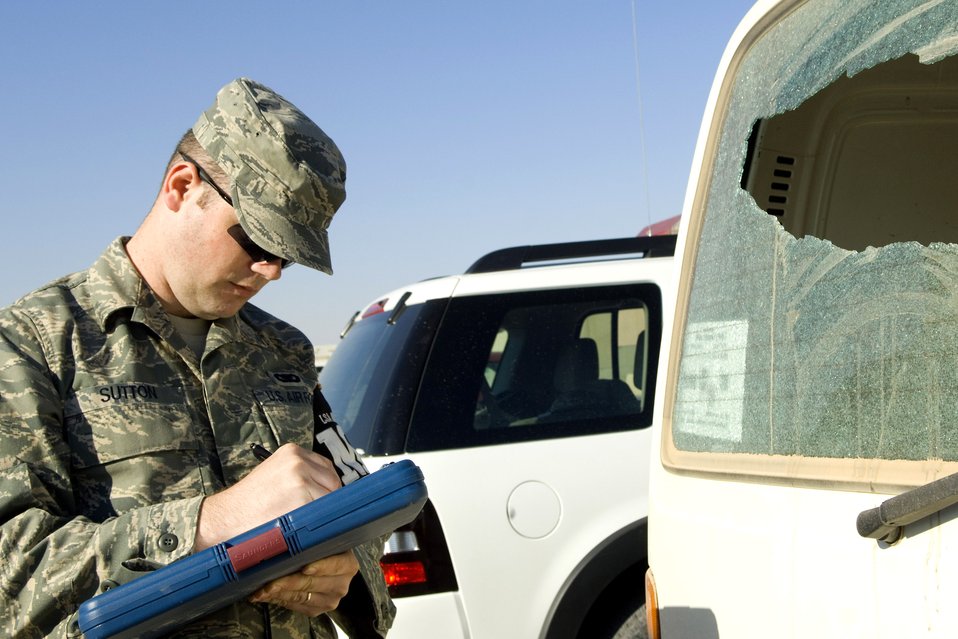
Balad Airmen keep order, maintain security

Airman 1st Class Brandon Sutton takes notes at the scene of a property damage incident at one of the dining facilities Dec. 27 at Balad Air Base, Iraq. Airman Sutton is a 332nd Expeditionary Security Forces Squadron Det. 1 Provost Marshal Office patrolman and deployed from McConnell Air Force Base, Kan.